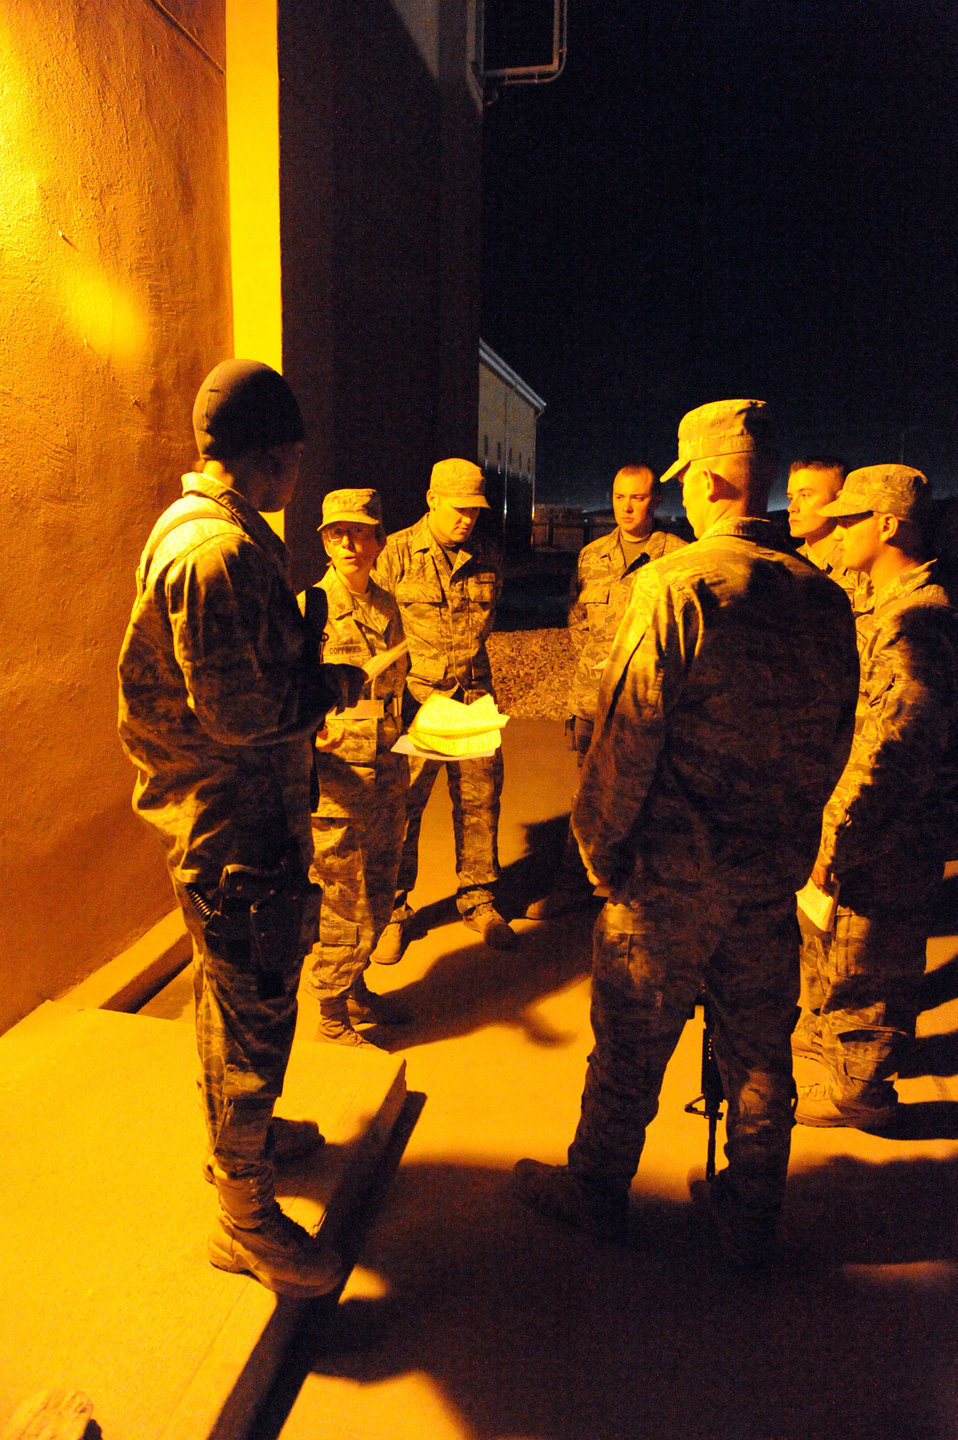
Keeping the faith at Bagram

Chaplain (Maj.) Kristina Coppinger, leads a field service for security forces members recently at Bagram Airfield, Afghanistan. Five religious support teams, each made up of an ordained officer and an enlisted assistant, ensure Airmen assigned to the 455th Air Expeditionary Wing are able to exercise their constitutional right to freedom of religion. Chaplain Coppinger is a chaplain assigned to the 455th AEW there.